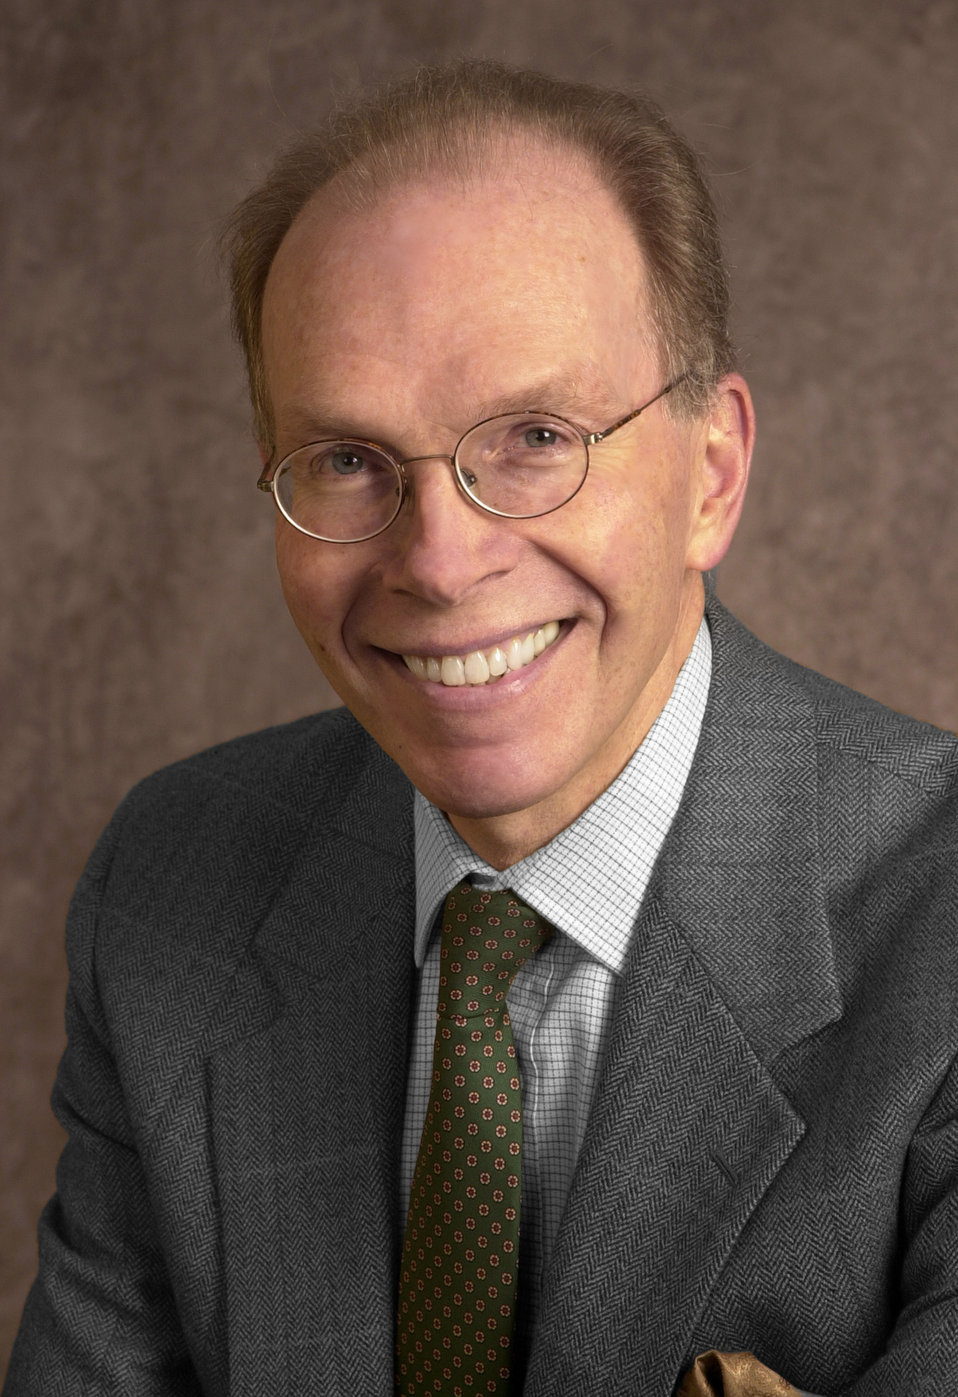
This is Jeff Koplan, M.D., M.P.H., former Centers for Disease Control and Prevention Director from 1998 - 2002, and Epidemic Intelligence Service Officer (EIS), class of '72.